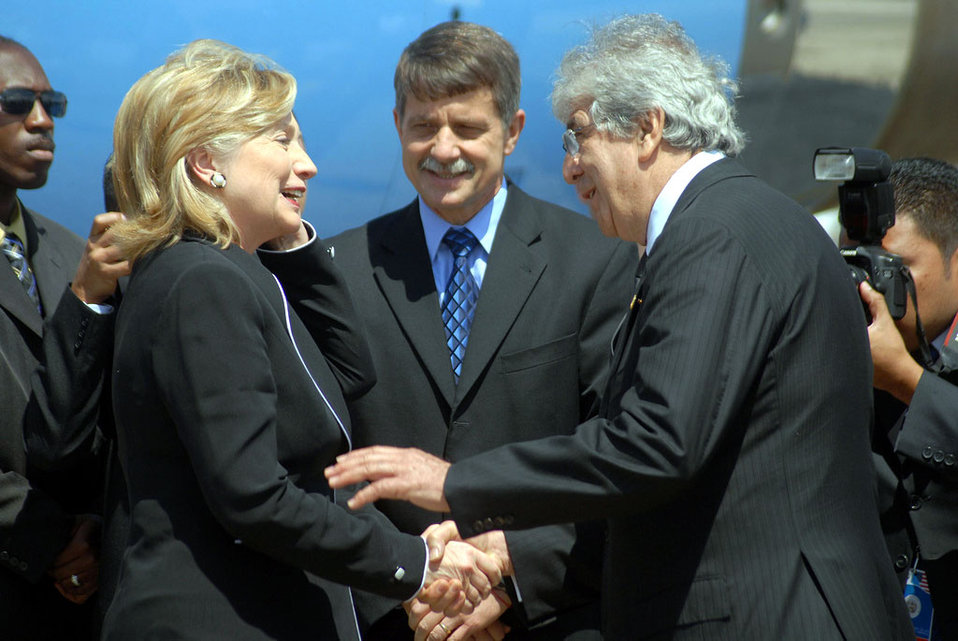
Secretary Clinton With Guatemalan Vice President Rafael Espada

U.S. Secretary of State Hillary Rodham Clinton shakes hands with Guatemalan Vice President Rafael Espada and the U.S. Ambassador to Guatemala, Stephen McFarland at the Fuerza Aérea Guatemalteca, Guatemala City, Guatemala March 5, 2010.